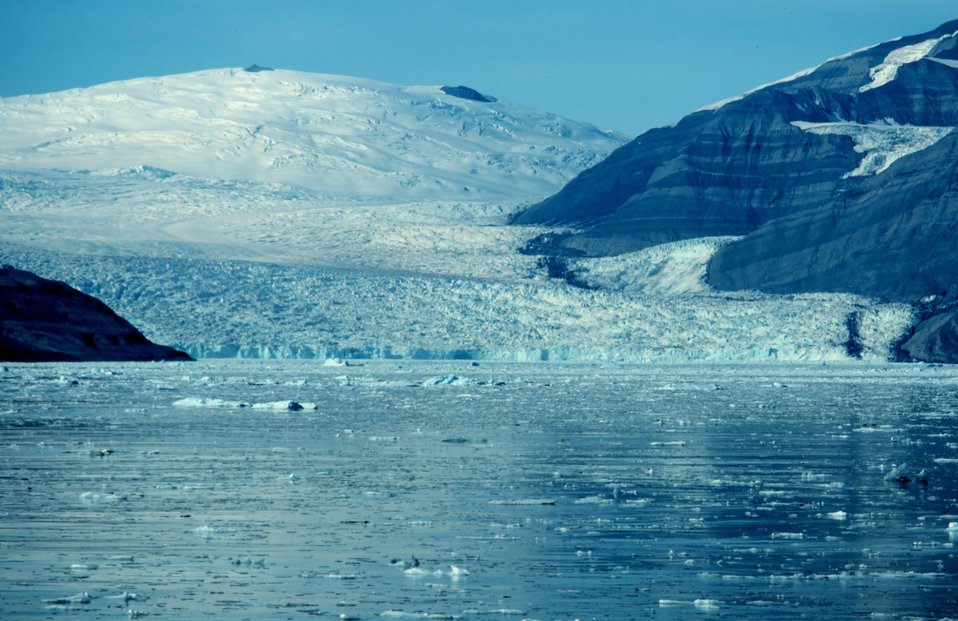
Guyot Glacier, Icy Bay